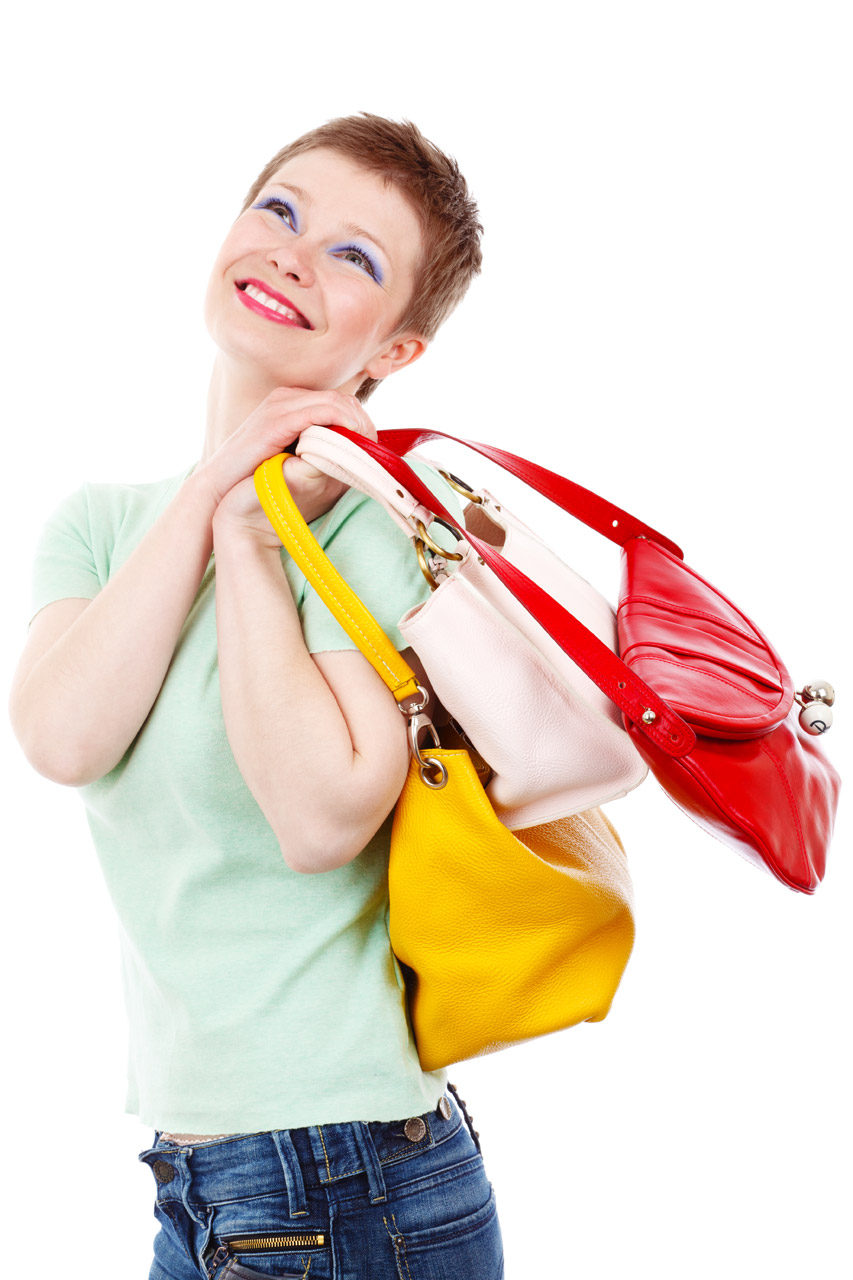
Woman with colorful bags

Happy young woman with colorful bags isolated on white background - jana svojsova.